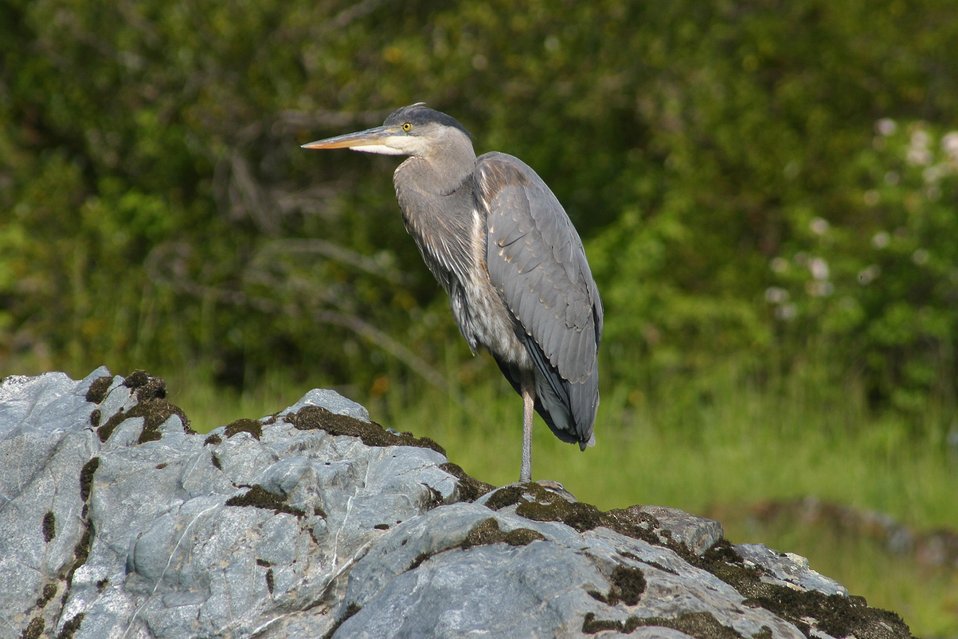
Great Blue Heron on the Wild section of the Rogue River from Grave Creek to Foster Bar. 3100 cfs at Grants Pass and 5300 at Agness.